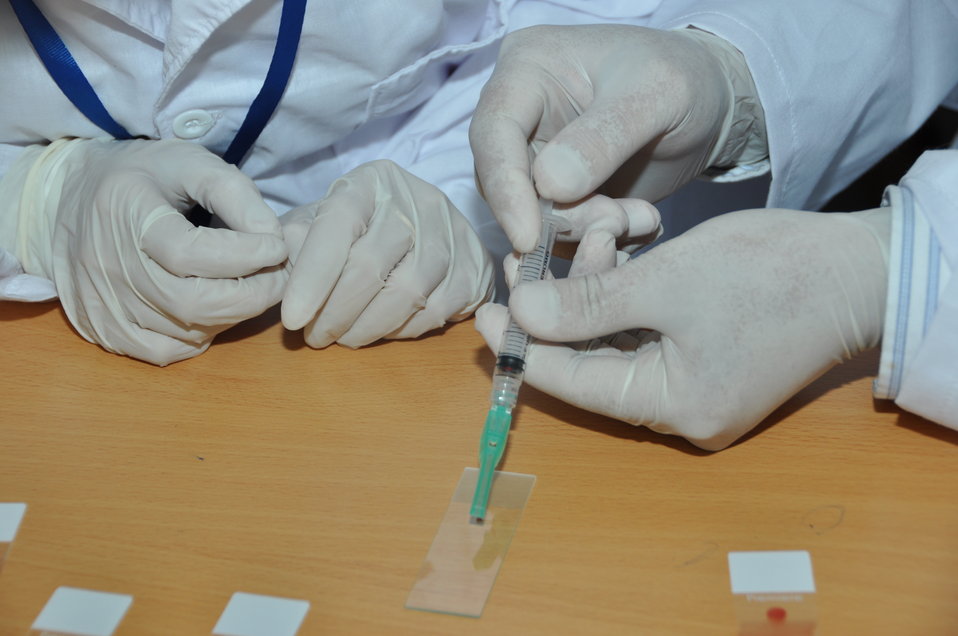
USAID EPT Smithsonian Pathology Training to Detect Emerging Infectious Diseases Wildlife and Other Animals in Vietnam Workshop